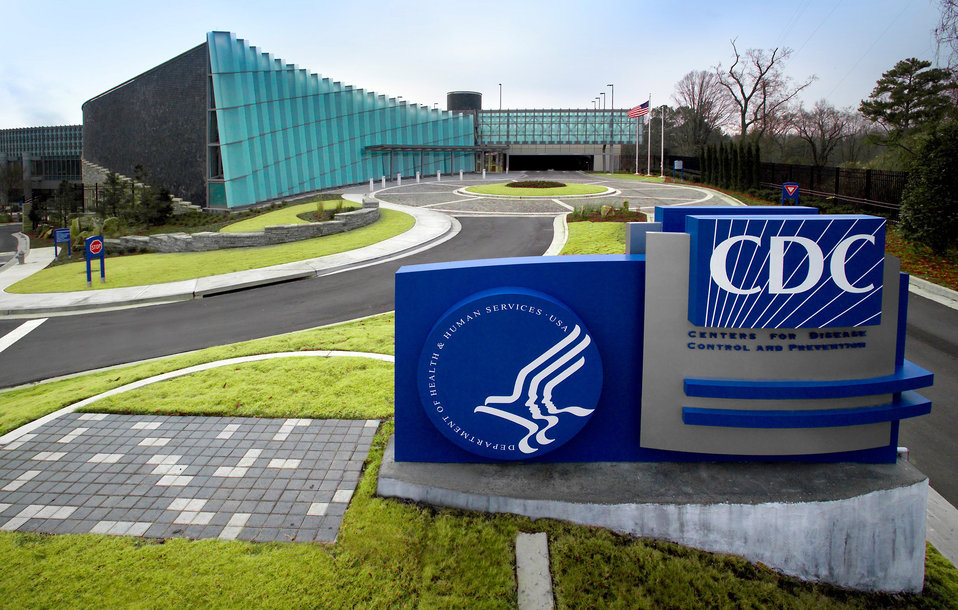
Captured by James Gathany, Centers for Disease Control's biomedical photographer, this 2006 image depicted the exterior of the new "Tom Harkin Global Communications Center", otherwise known as Building 19, located on the organization's Roybal Campus in Atlanta, Georgia. The facility houses the CDC's Information Center/Library, auditoria and meeting halls, which are used to accommodate in-house staff meetings, and national/international conferences hosted by the CDC, and the National Center for Health Marketing's, Division of Creative Services, which includes a full service television broadcast facility.